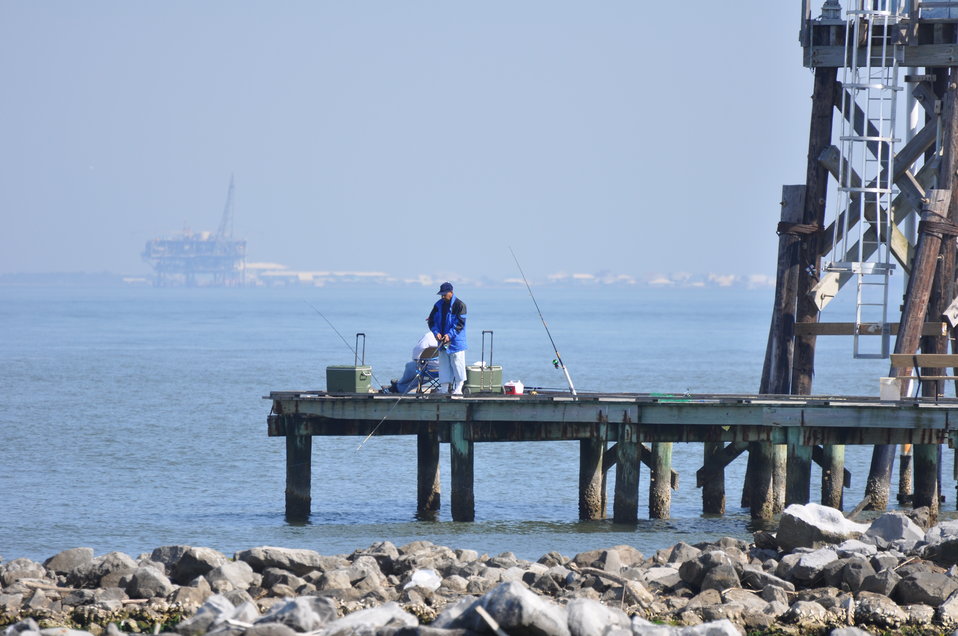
Recreational fishing near oil well, Alabama